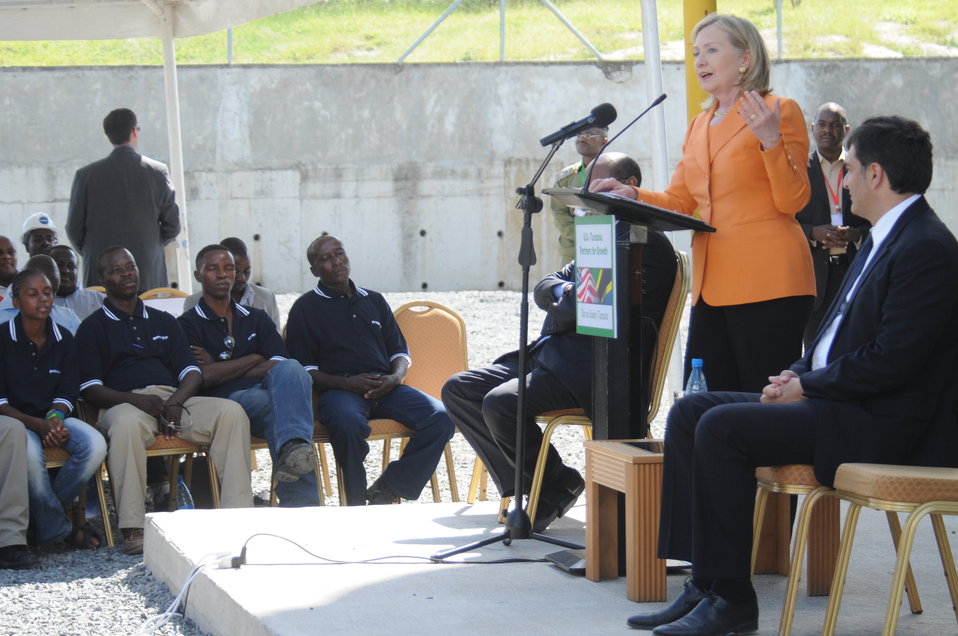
Secretary Clinton Delivers Remarks at the Symbion Power Plant

U.S. Secretary of State Hillary Rodham Clinton delivers remarks at the Symbion Power Plant in Dar es Salaam, Tanzania, on June 12, 2011.